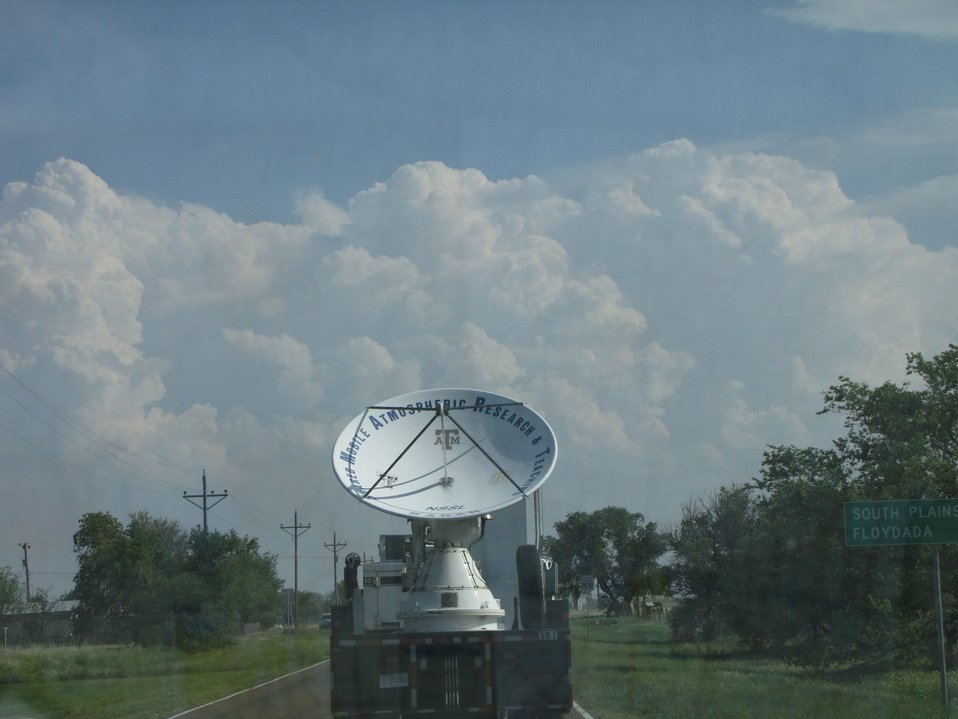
SMART-R radar heading toward the storms outside of Childress, Texas.